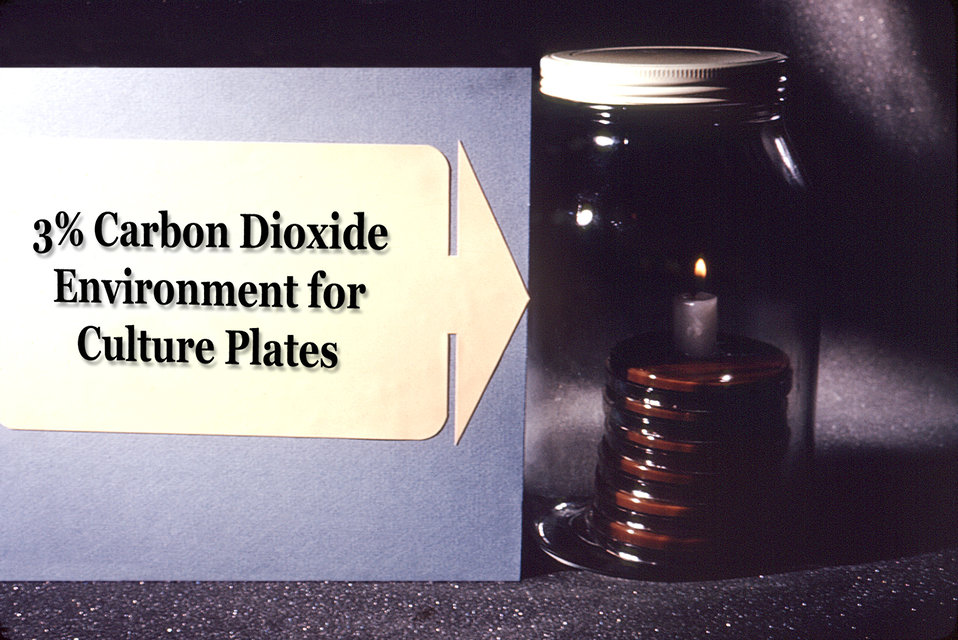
This is a candle jar CO2 extraction technique used in the incubation of N. gonorrhoeae bacterial cultures.